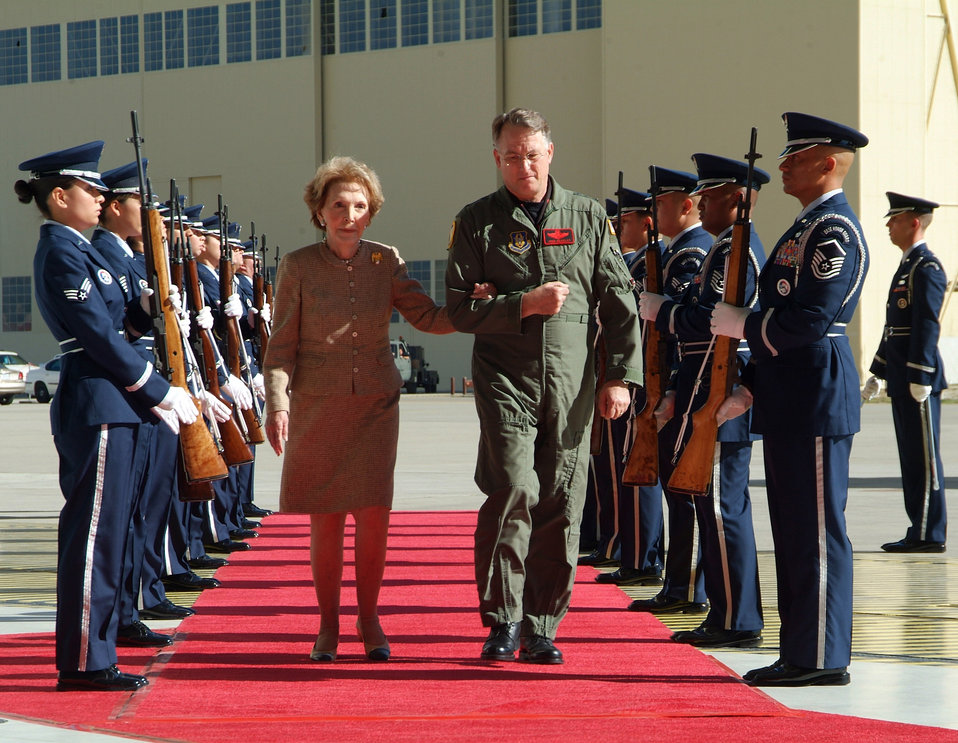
Spirit of Ronald Reagan

MARCH AIR RESERVE BASE, Calif. (AFPN) -- Lt. Gen. John Bradley escorts former first lady Nancy Reagan during today's ceremony to dedicate a C-17 Globemaster III -- the Spirit of Ronald Reagan -- to honor her late husband, President Ronald Reagan. The general is chief of the Air Force Reserve and commander of Air Force Reserve Command.